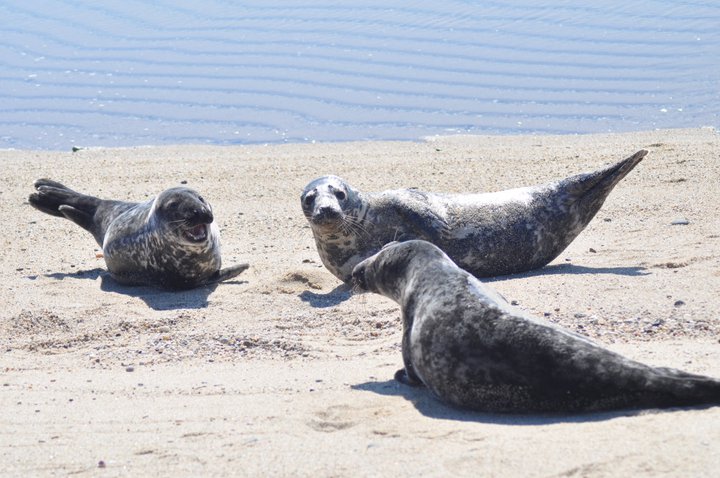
Seals at Nantucket National Wildlife Refuge in Massachusetts.